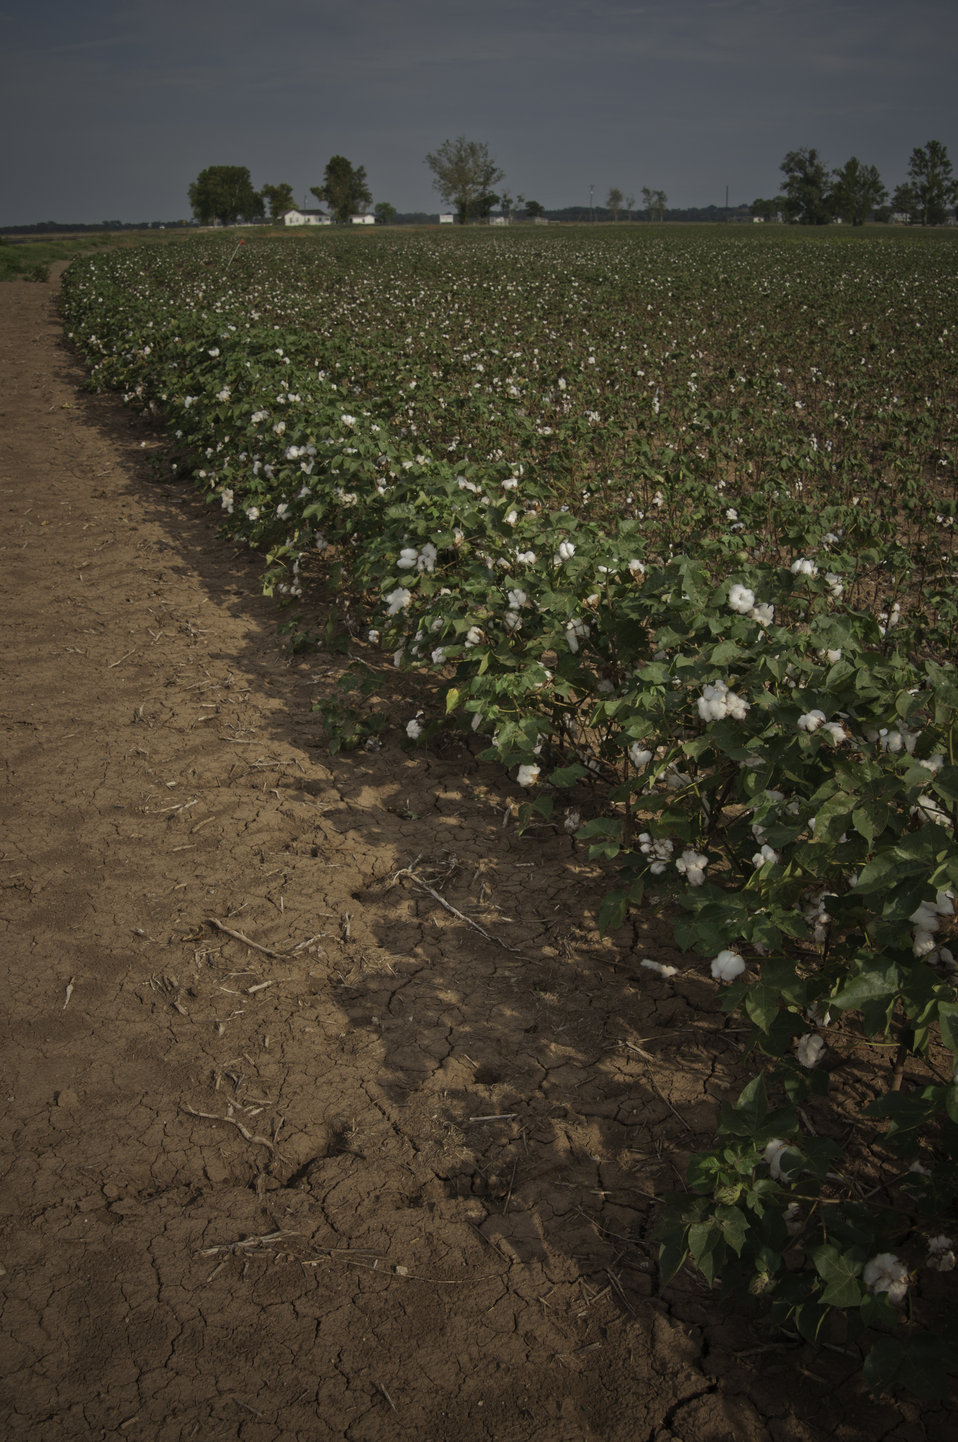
Irrigated cotton grows on a farm in Navasota, TX on Aug. 23, 2013.